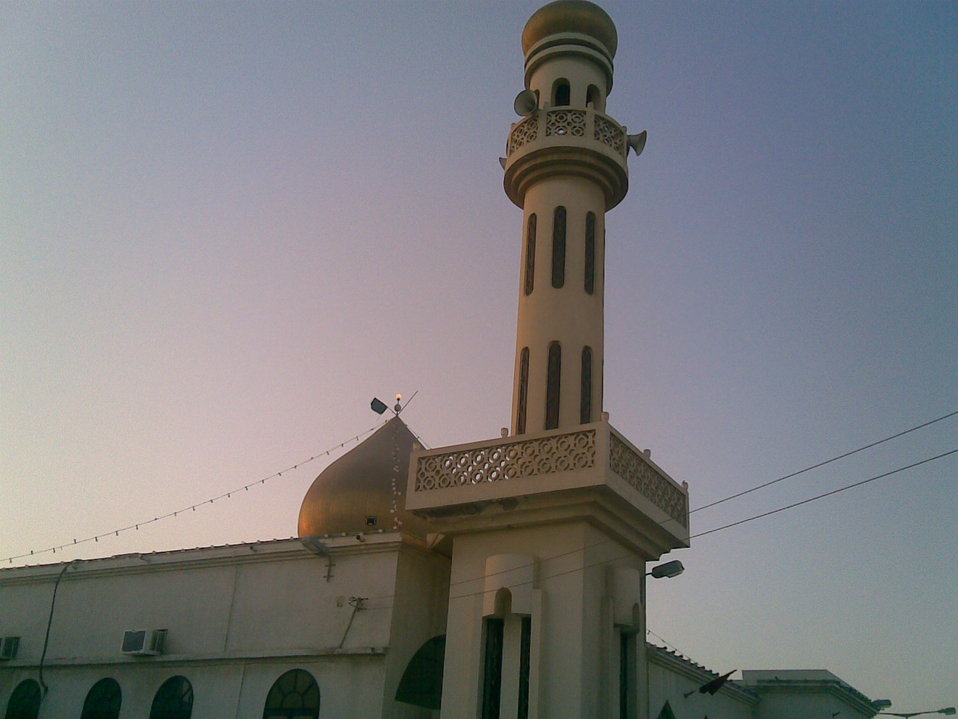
العربية: مسجد الشيخ سهلان في قرية العكر وبه مرقد العالمان الجليلان الشيخ سهلان والشيخ مقبل.